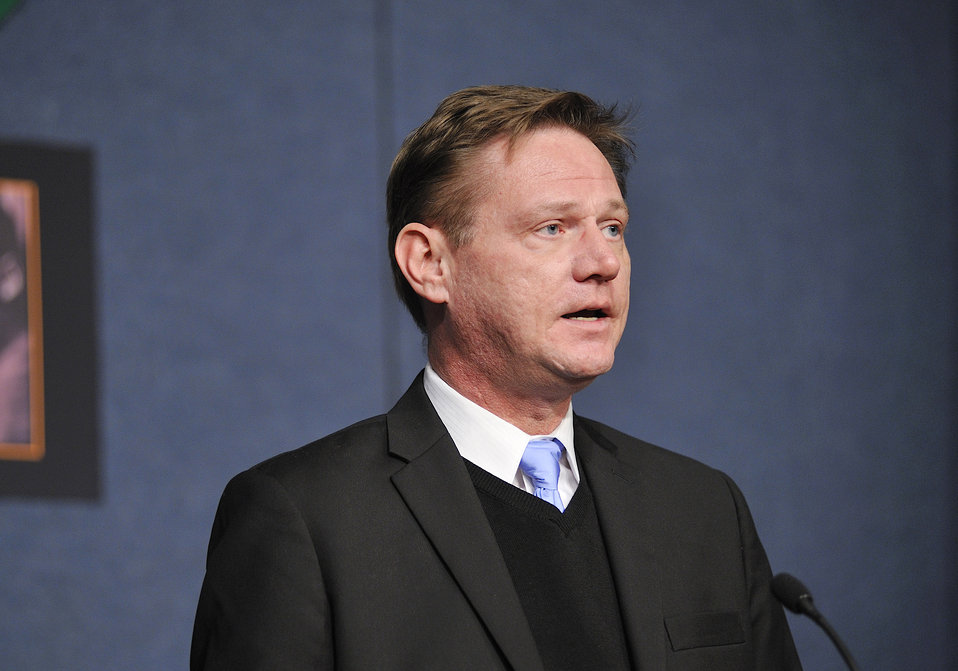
Martin Luther King Jr. Day Celebration at DOE headquarters.